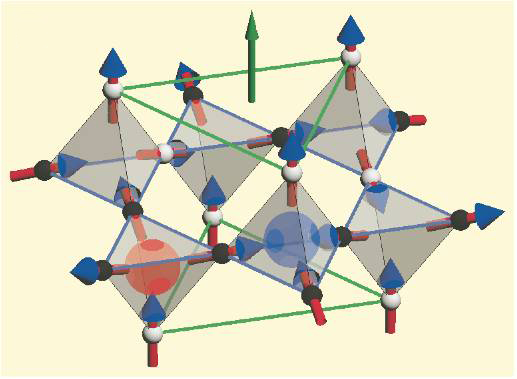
Magnetic Monopoles